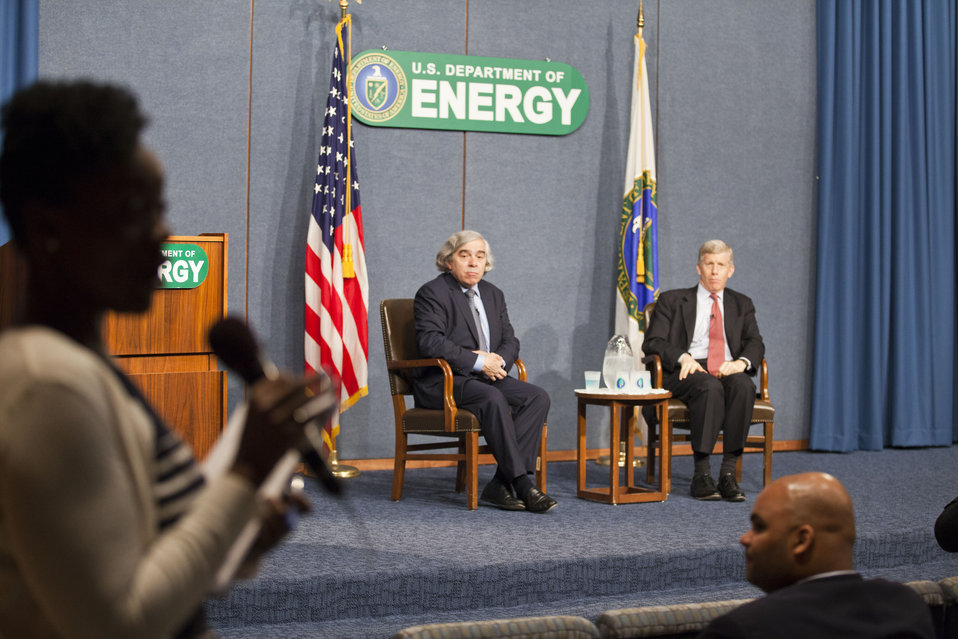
DOE Town Hall

On May 22, 2013, newly sworn-in Energy Secretary Dr. Ernest Moniz opened up a town hall forum. DOE employees were invited to attend, and submit questions to staff.